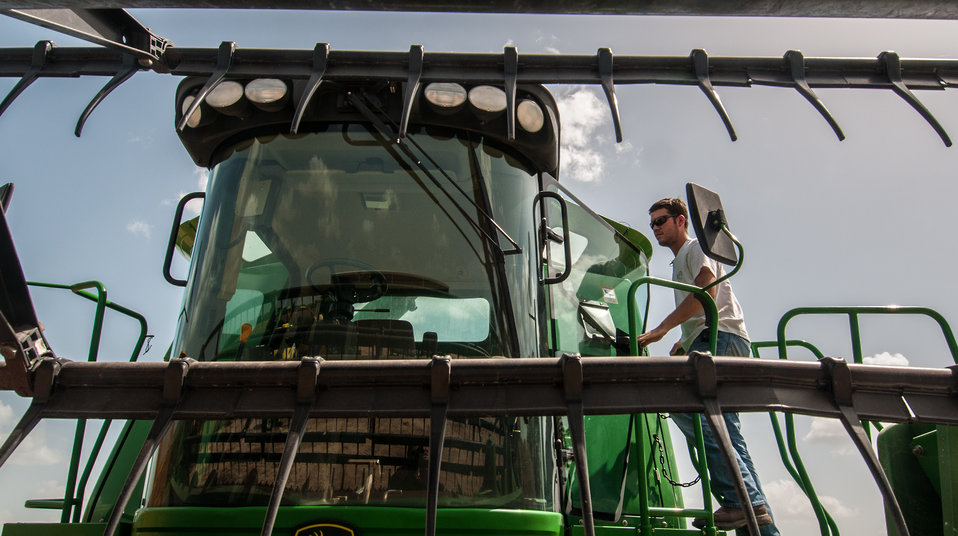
Philip Marek enters one of the family combines at his father's farm (T and S Marek Farms) in Wharton County, TX, on Jun. 20, 2013. Philip Marek has been an independent farm since 2010, starting with 210 acres. Marek and his cousin Josh Marek were able to use a U.S. Department of Agriculture (USDA) Farm Services Agency (FSA) small and new farmer and rancher loan programs provided them the ability to handle initial business start-up and equipment purchase.